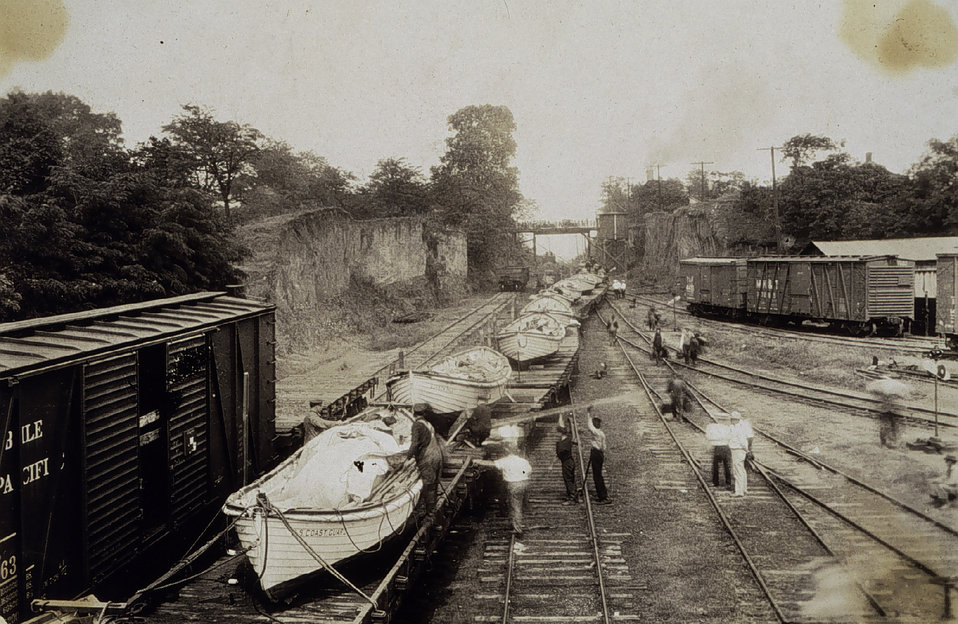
The great Mississippi River flood of 1927. Lifeboats transported to Natchez from New England and Great Lakes. C&GS officers took part in rescue efforts